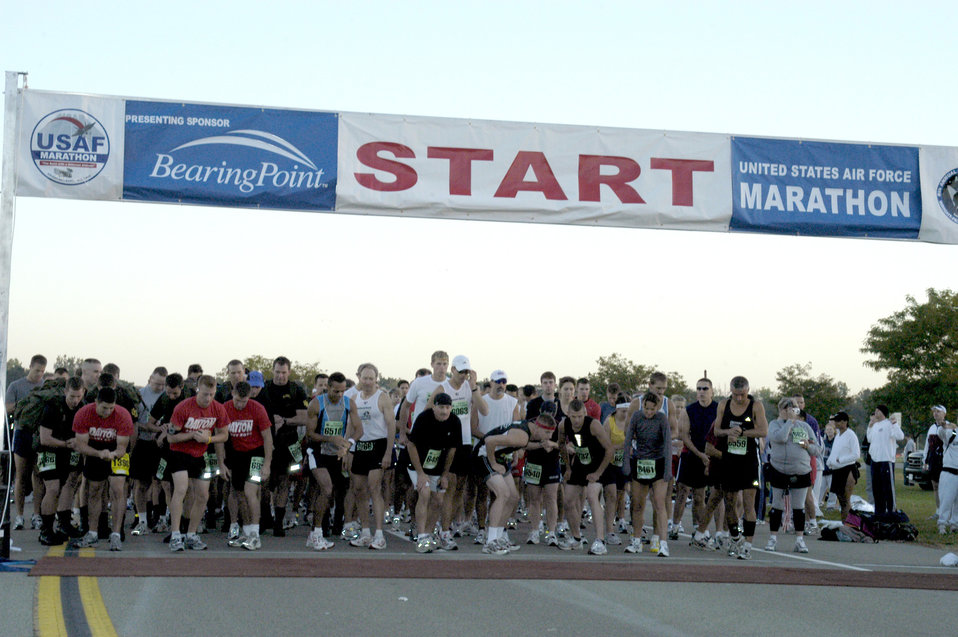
AF officials announce marathon results

WRIGHT-PATTERSON AIR FORCE BASE, Ohio -- More than 3,800 runners competed in the 8th annual official Air Force Marathon here Sept. 18. The half-marathon event began just as the sun was coming up, following the full and wheelchair marathon starting horns. The race also included a marathon relay and 5k event.